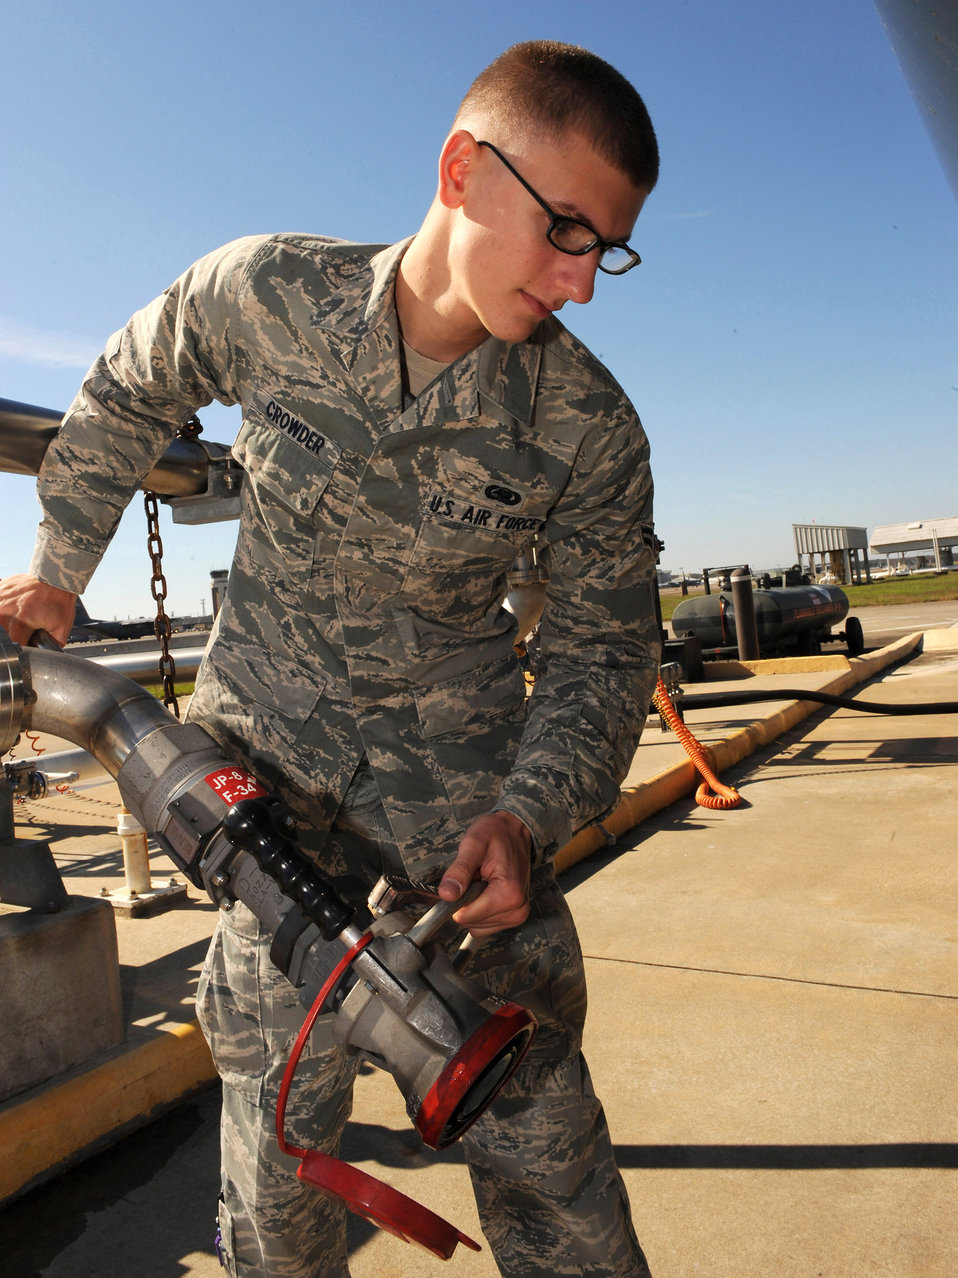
Airman 1st Class Kevin Crowder positions a pantograph arm to attach to an R-11 refueling truck to begin refueling 6,000 gallons of jet fuel to service the C-130 Hercules fleet Oct. 21, 2009, at Little Rock Air Force Base, Ark. Airman Crowder is a 19th Logistics Readiness Squadron fuels distribution operator.